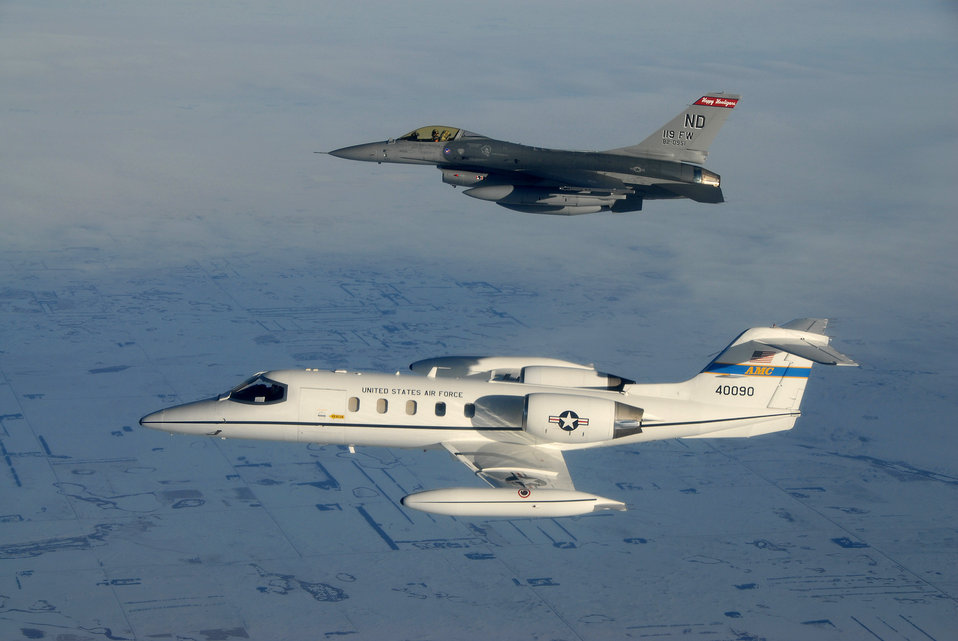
First C-21 arrives in North Dakota

Capt. Stephanie Kelsen pilots a North Dakota Air National Guard F-16 Fighting Falcon alongside the first C-21 to join the 119th Fighter Wing as it flies Jan. 10 into Fargo, N.D. Lt. Col. Craig Schroeder and Maj. Jon Wutzke of the 178th Fighter Squadron are flying the C-21 as it arrives in Fargo for the first time. Captain Kelsen is also from the 178th FS. The C-21 aircraft is considered a